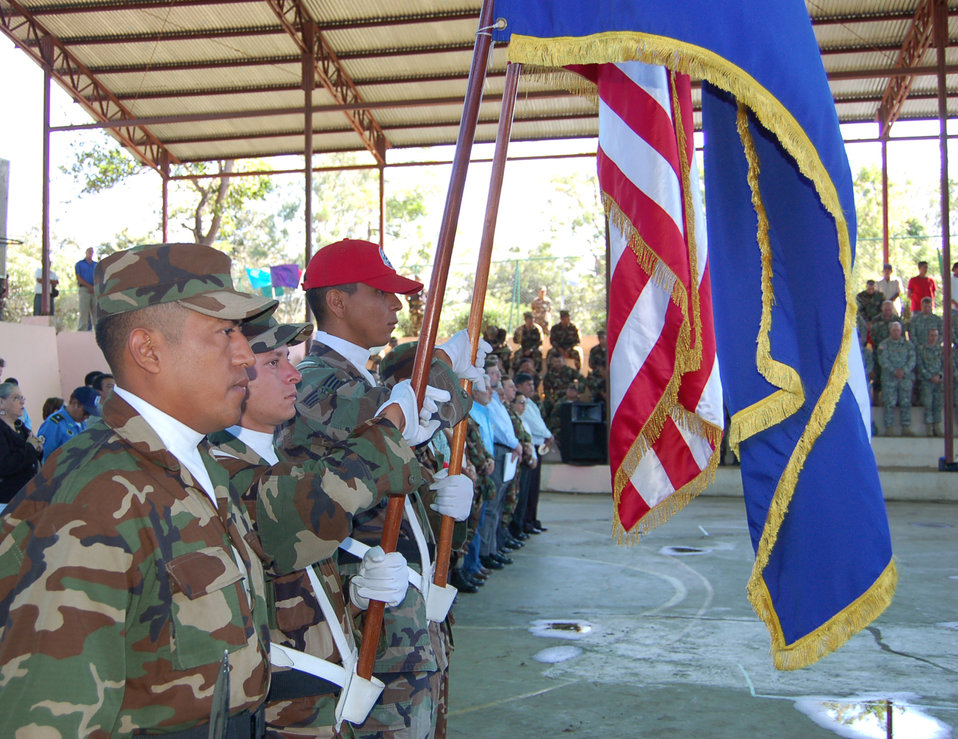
New Horizons-Nicaragua 2007

Senior Airman Jesus Cortez, member of the 820th Expeditionary Red Horse Squadron out of Nellis Air Force Base, Nev., along with Nicaraguan army Sgt. 3rd Class Juan Ramon Bado and Soldiers Marcos Mercado and Vladmir Perez, present flags from both countries during the New Horizons - Nicaragua 2007 opening ceremonies Feb. 15.